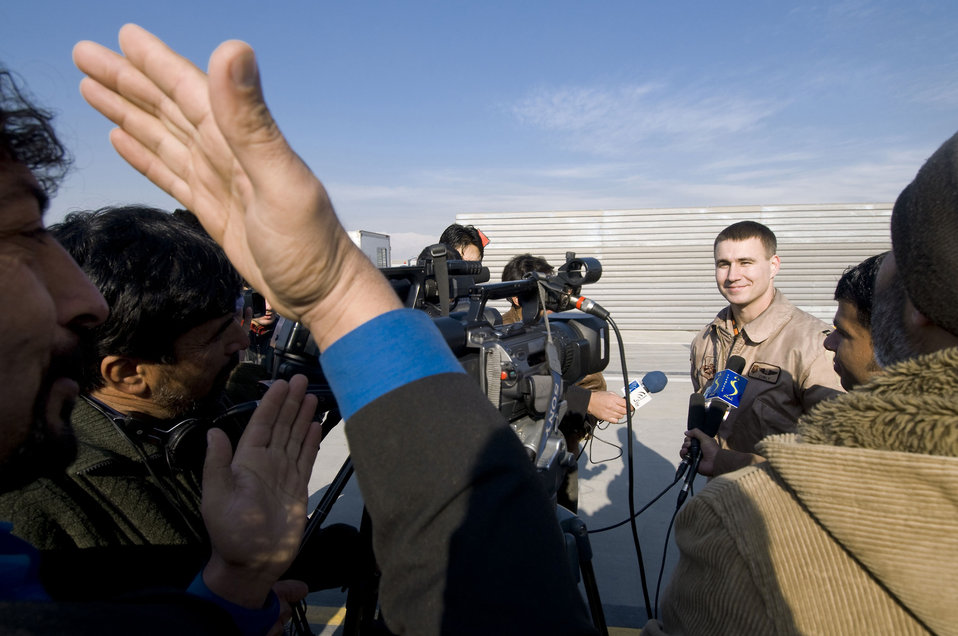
Afghan media learn about close-air support

A report from an Afghan television station asks a weapons systems officer a question about the F-15E Strike Eagle capabilities during Afghan Media Day Jan. 5 at Bagram Airfield, Afghanistan. The media day consisted of a tour of fighter aircraft and a close-air support briefing from the wing commander.